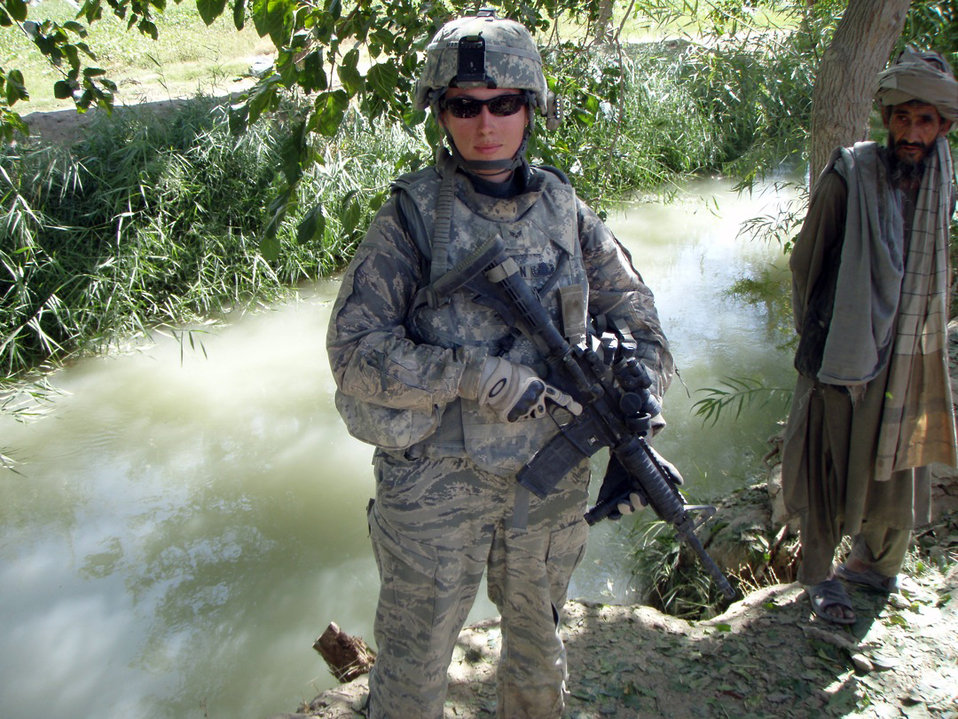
The women of explosive ordnance disposal

Senior Airman Marie Martinson patrols the area with an Afghan man while during deployment to Afghanistan. Airman Martinson is an explosive ordnance disposal technician at the 88th Air Base Wing at Wright-Patterson Air Force Base, Ohio.